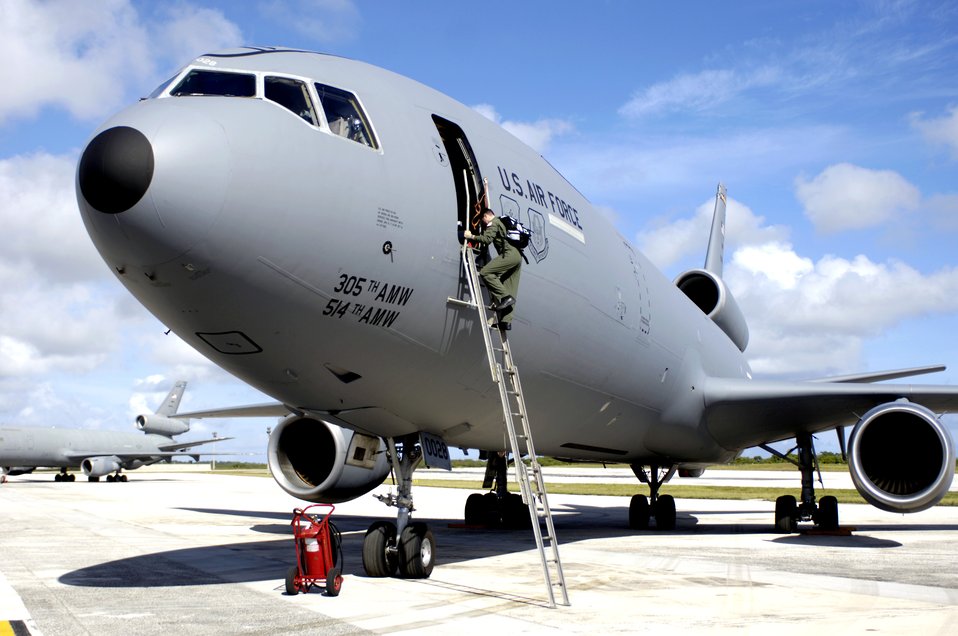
Tankers keep 'em flying at Valiant Shield

Staff Sgt. Michael Hinton climbs into a KC-10 Extender at Andersen Air Force Base, Guam, on Wednesday, June 21, during Exercise Valiant Shield. The joint exercise includes more than 300 aircraft, 28 naval vessels and approximately 20,000 service members. Sergeant Hinton is a boom operator with the 9th Air Refueling Squadron at Travis AFB, Calif.